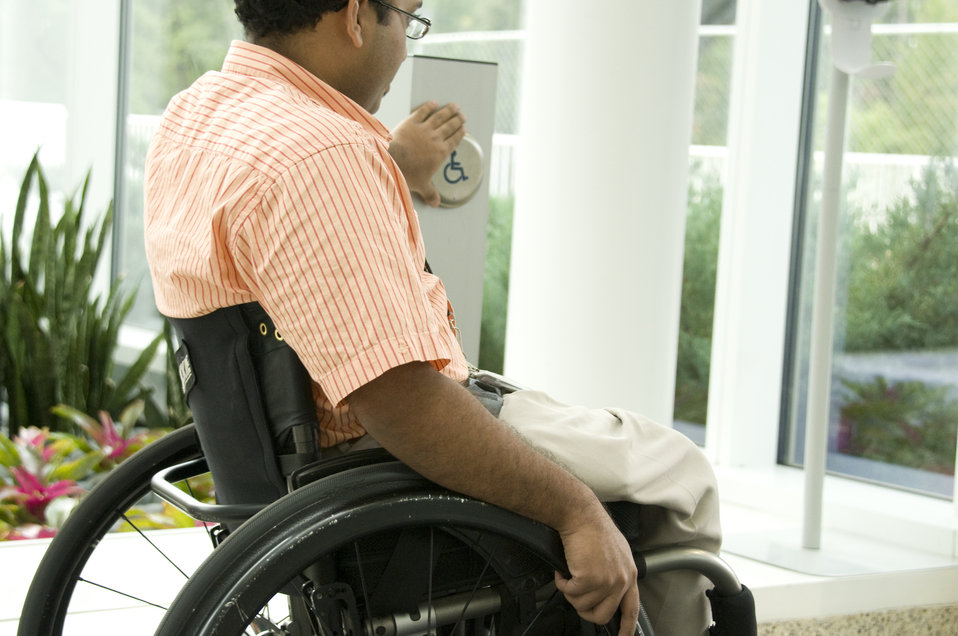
The man depicted here, was seated in his wheelchair, and was in the process of exiting one of the Centers for Disease Control's (CDC) Atlanta, Georgia facilities. Note that he was pressing the easily-accessible push pad, which would open the building's mechanized door, providing an unimpeded exit.